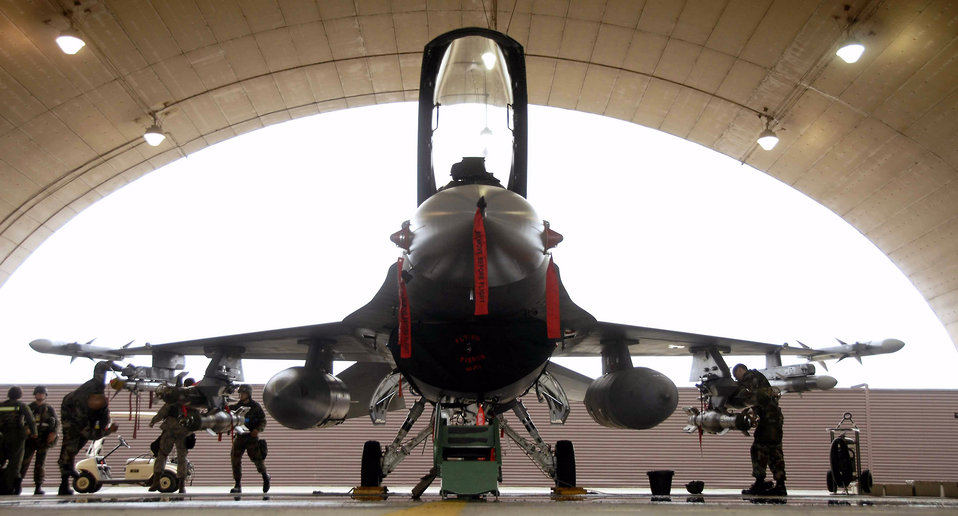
Osan exercise tests Airmen

Airmen prepare an F-16 Fighting Falcon aircraft for an upcoming mission during a base-wide exercise July 21 at Osan Air Base, South Korea. The operational readiness exercise tests Osan AB Airmen's ability to execute combat operations, receive follow-on forces and defend the base from attack.